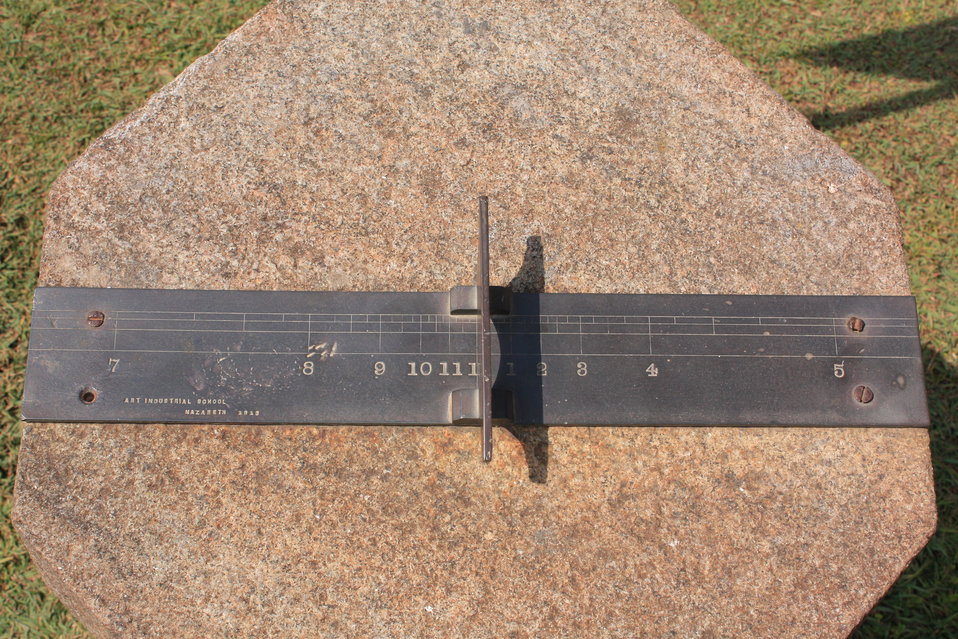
1913 horizontal sundial at the Tea Museum of Munnar (Kerala, India), indicating '2 o'clock'. Fran√ßais†: Cadran solaire horizontal datant de 1913, au mus√©e du th√© de Munnar (Keral, Inde), indiquant '2 heures'.